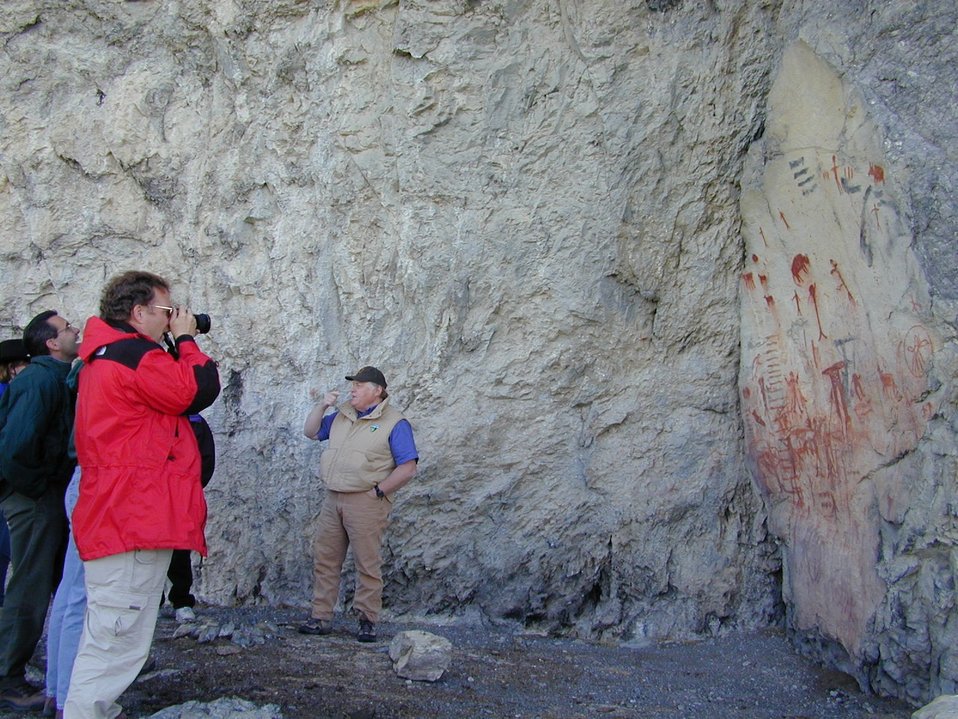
Birch Creek Valley Idaho Falls Field Office USRD Upper Snake River District